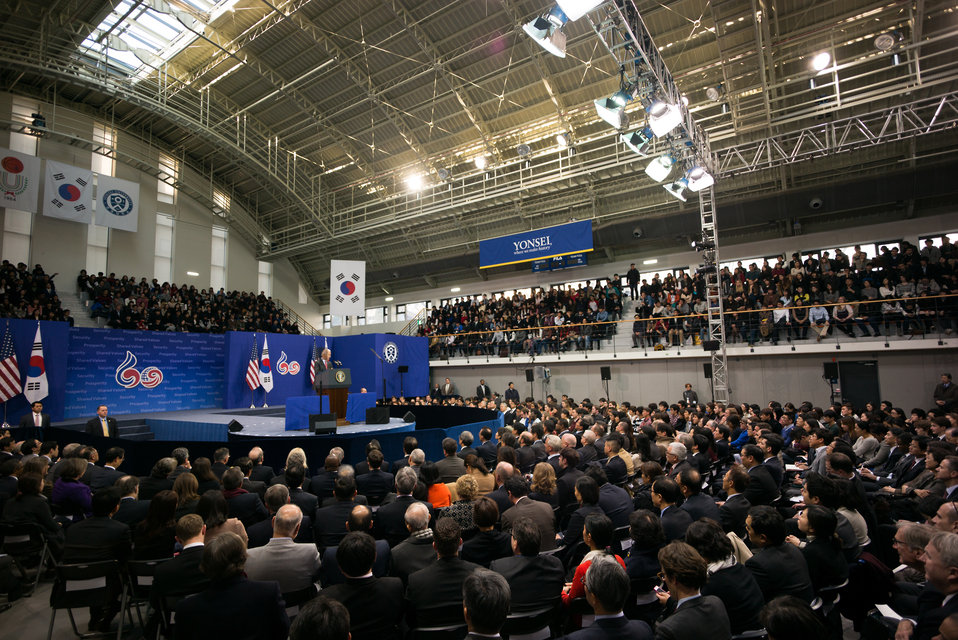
Vice President Biden Delivers Remarks at Yonsei University in Seoul

Vice President Joseph Biden delivers a speech at Yonsei University in Seoul, South Korea, on December 6, 2013.